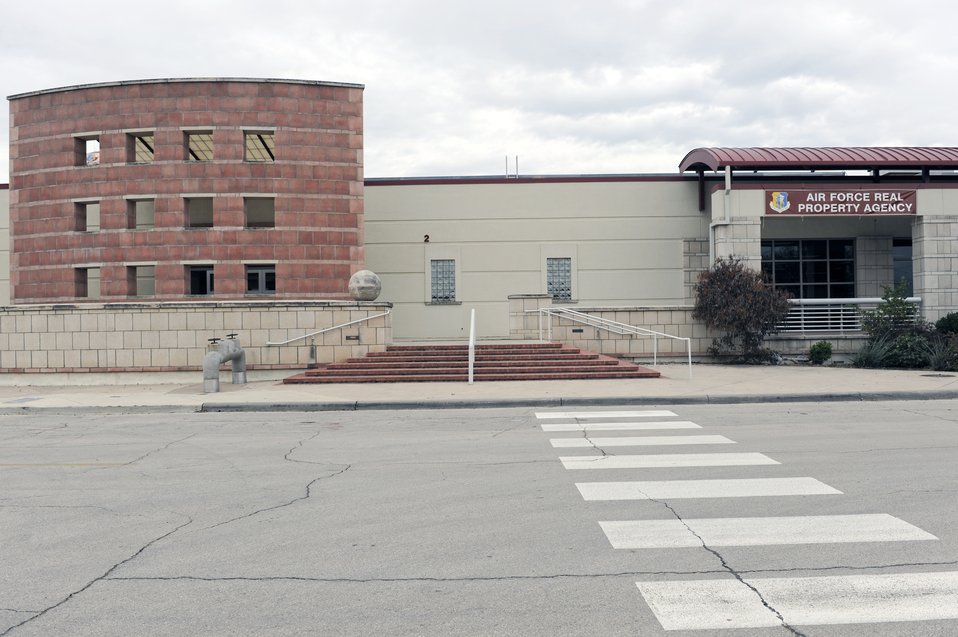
Air Force Real Property Agency officials are the first tenant to move into the newly renovated, quarter-mile long building at the Port San Antonio, Texas. Building 171 will be home to 11 Air Force agencies and will house 2,800 Air Force, government and civilian staff.